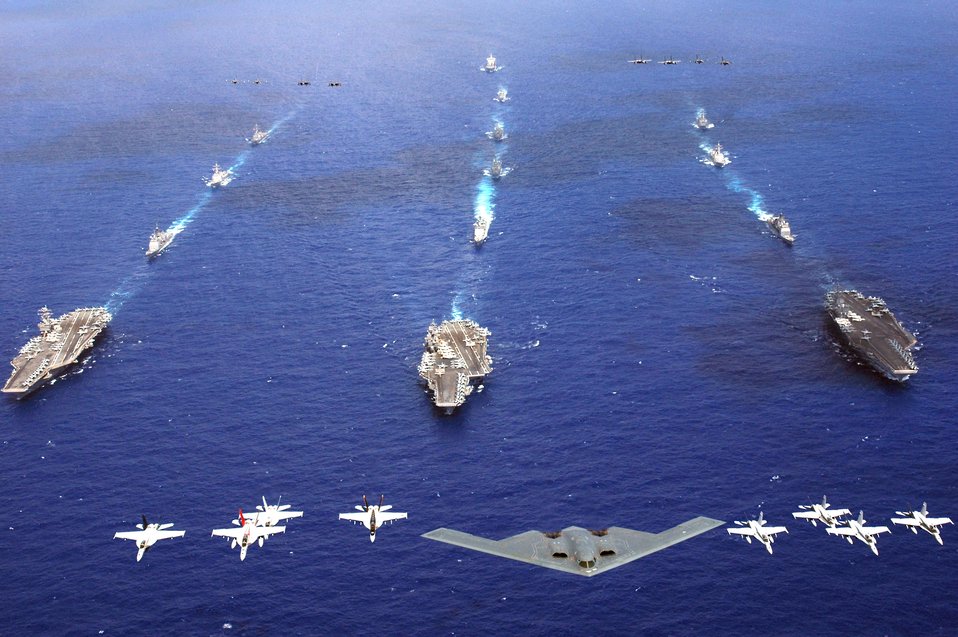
Joint operations in the Pacific

A B-2 Spirit and 16 other aircraft from the Air Force, Navy and Marine Corps fly over the USS Kitty Hawk, USS Ronald Reagan and USS Abraham Lincoln carrier strike groups in the western Pacific Ocean on Sunday, June 18, to kick off Exercise Valiant Shield 2006. The joint exercise consists of 28 naval vessels, more than 300 aircraft and approximately 20,000 servicemembers.